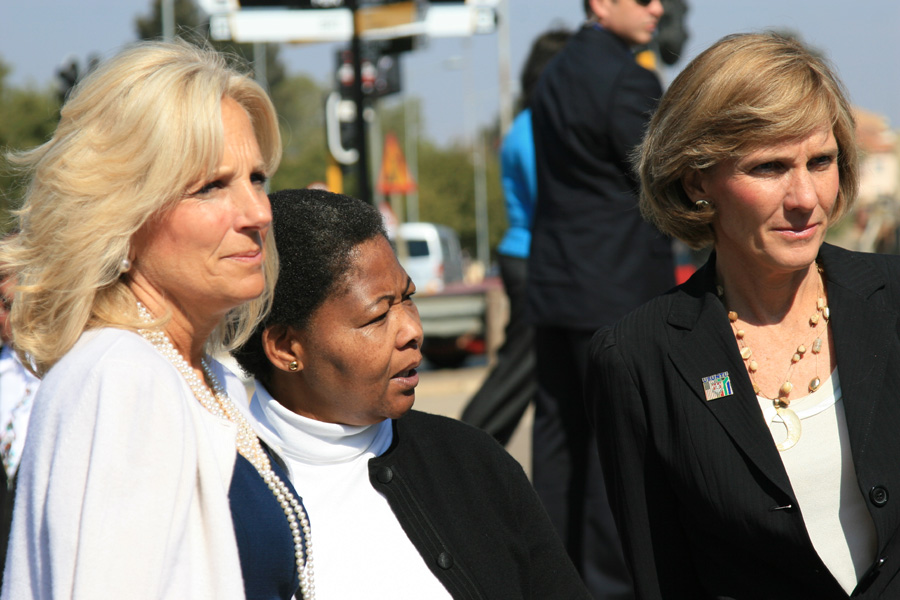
Dr. Jill Biden and Liz Berry Gips Visit Hector Pieterson Museum

Dr. Jill Biden, wife of Vice President Joseph Biden, and Liz Berry Gips, wife of U.S. Ambassador to South Africa Donald H. Gips, visit the Hector Pieterson Museum in Soweto, South Africa, on June 12, 2010.